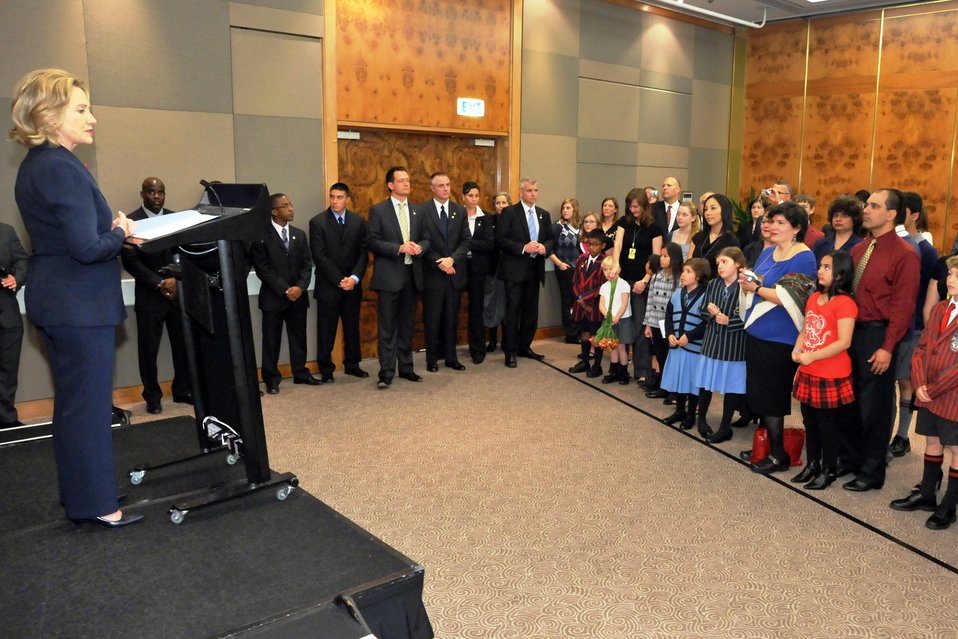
Secretary Clinton Speaks With Embassy Wellington Staff and Their Families

U.S. Secretary of State Hillary Rodham Clinton speaks with U.S. Embassy Wellington in New Zealand staff and their families in Wellington, New Zealand, on November 5, 2010.